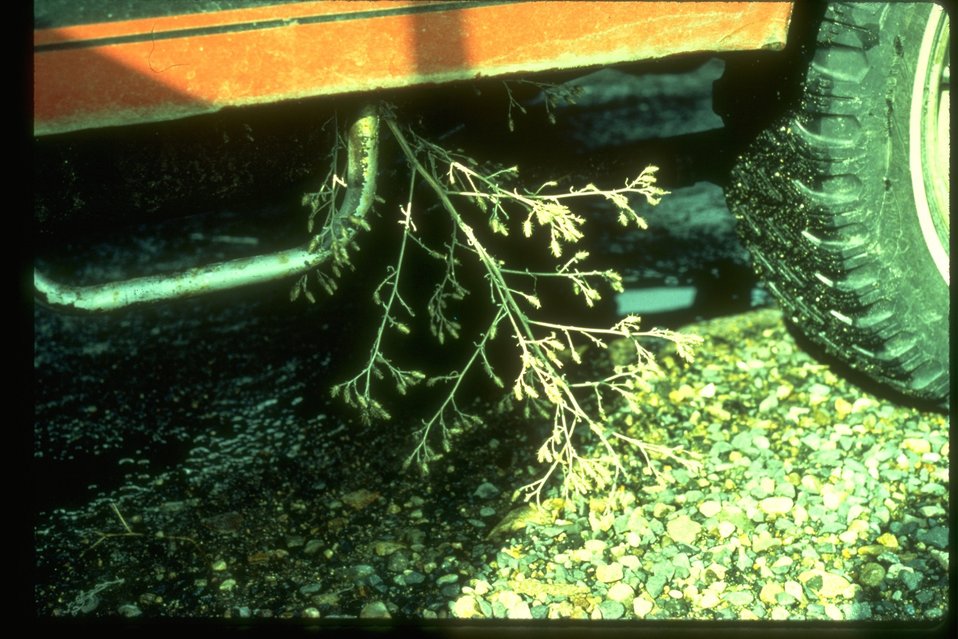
Diffuse knapweed hooked on vehicle.